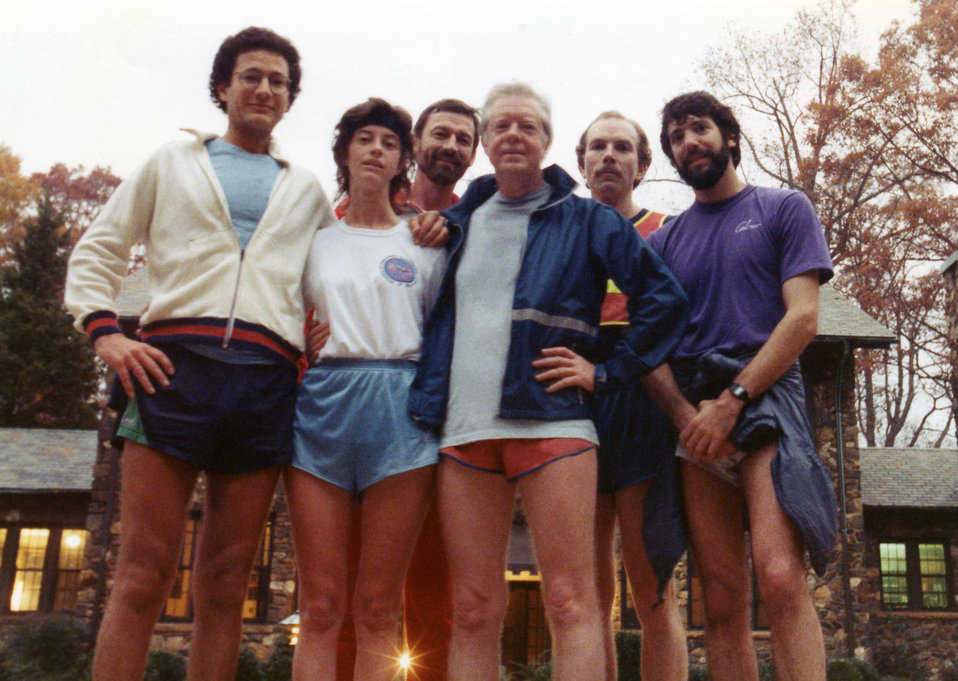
While visiting the Centers for Disease Control and Prevention (CDC) in November, 1984, former U.S. President Jimmy Carter took time out for a run with some staff members of the CDC. Shown in the front row (left to right), were Mark Rosenberg, Chief of the Violence Epidemiology Branch; Nancy Heddemark, from the International Health Program Office; President Carter; and Epidemic Intelligence Service (EIS) Officer Craig White. Standing in the back row was the Director of the Center for Health Promotion and Education, Dennis Tolsma (Lt.), and Assistant Director for Public Health Practice, and former CDC Director, Jeffery Koplan.